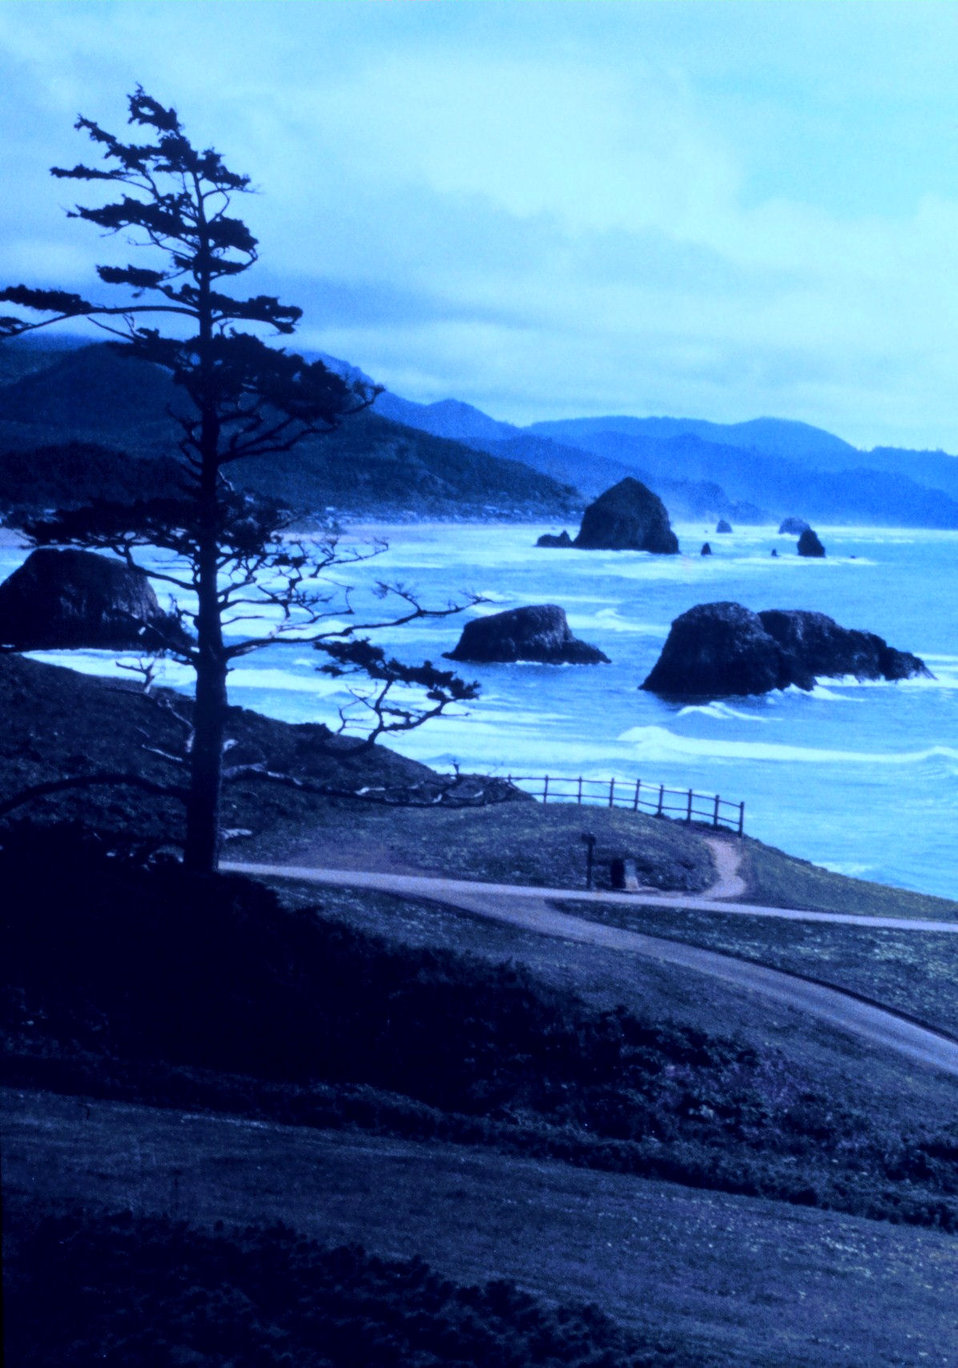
Looking south at Ecola State Park, about 5 miles south of Seaside.